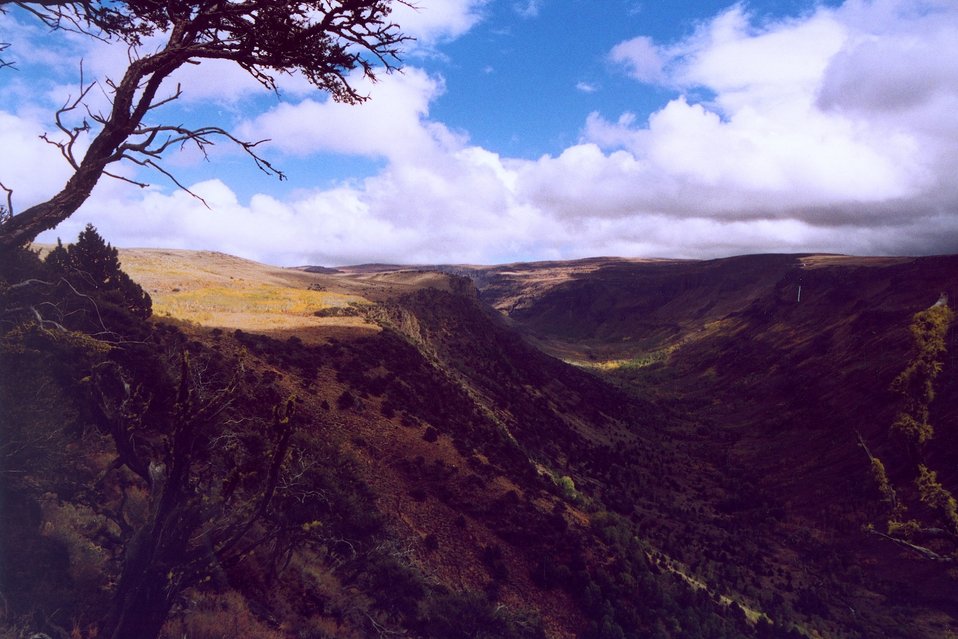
Little Blitzen near Pratt Overlook, Steen's Mountain.